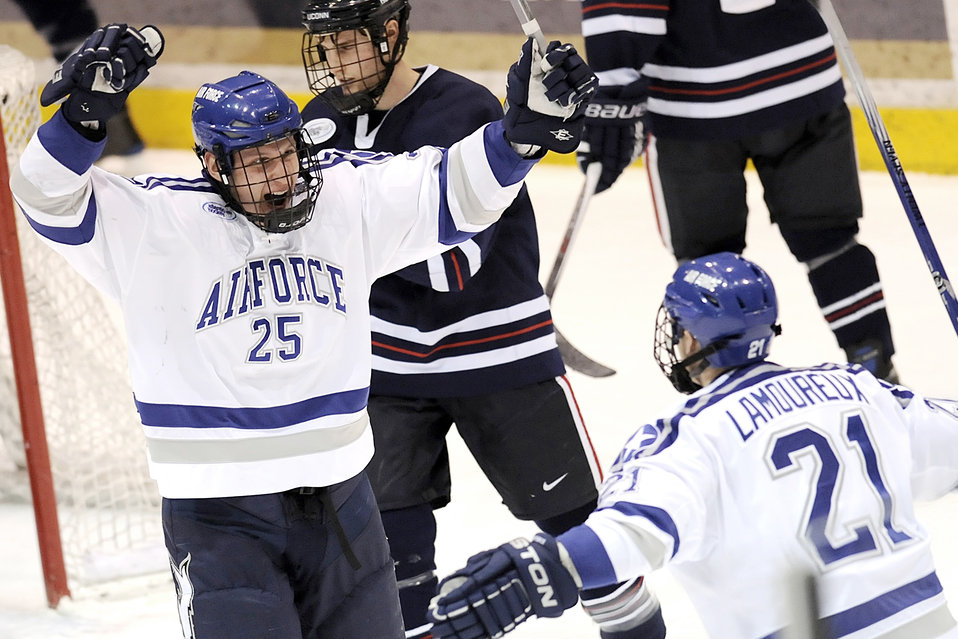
Falcons outskate UConn Huskies

Air Force Academy sophomore Tim Kirby celebrates after scoring the game-winner with 2:46 remaining in the third period as Air Force beat the University of Connecticut 2-1 at the Academy's Cadet Ice Arena Jan. 8, 2010. The following evening, Air Force and UConn skated to a 2-2 overtime tie.